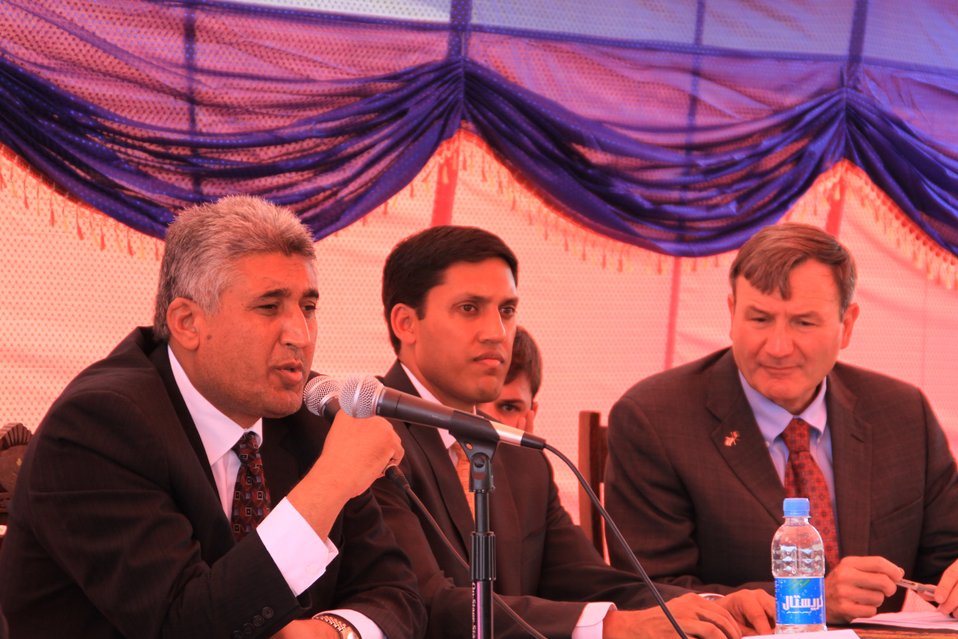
Badam Bagh Farm